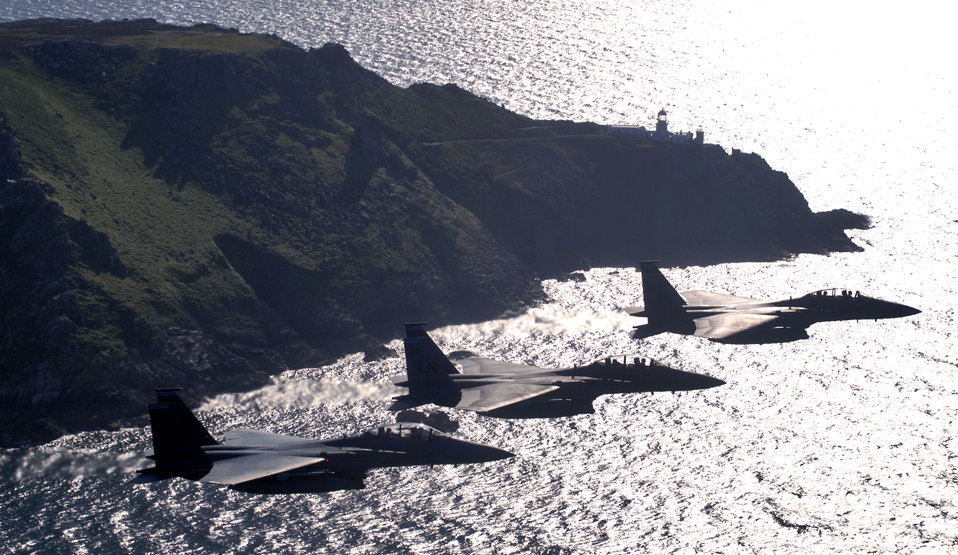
Following a flight of Eagles

Three F-15E Strike Eagles from the 492nd Fighter Squadron at Royal Air Force Lakenheath, England, cruise at 300 mph along the southwestern English coast. The aircrews were on the way to an area off the coast where they could practice basic surface attack techniques.